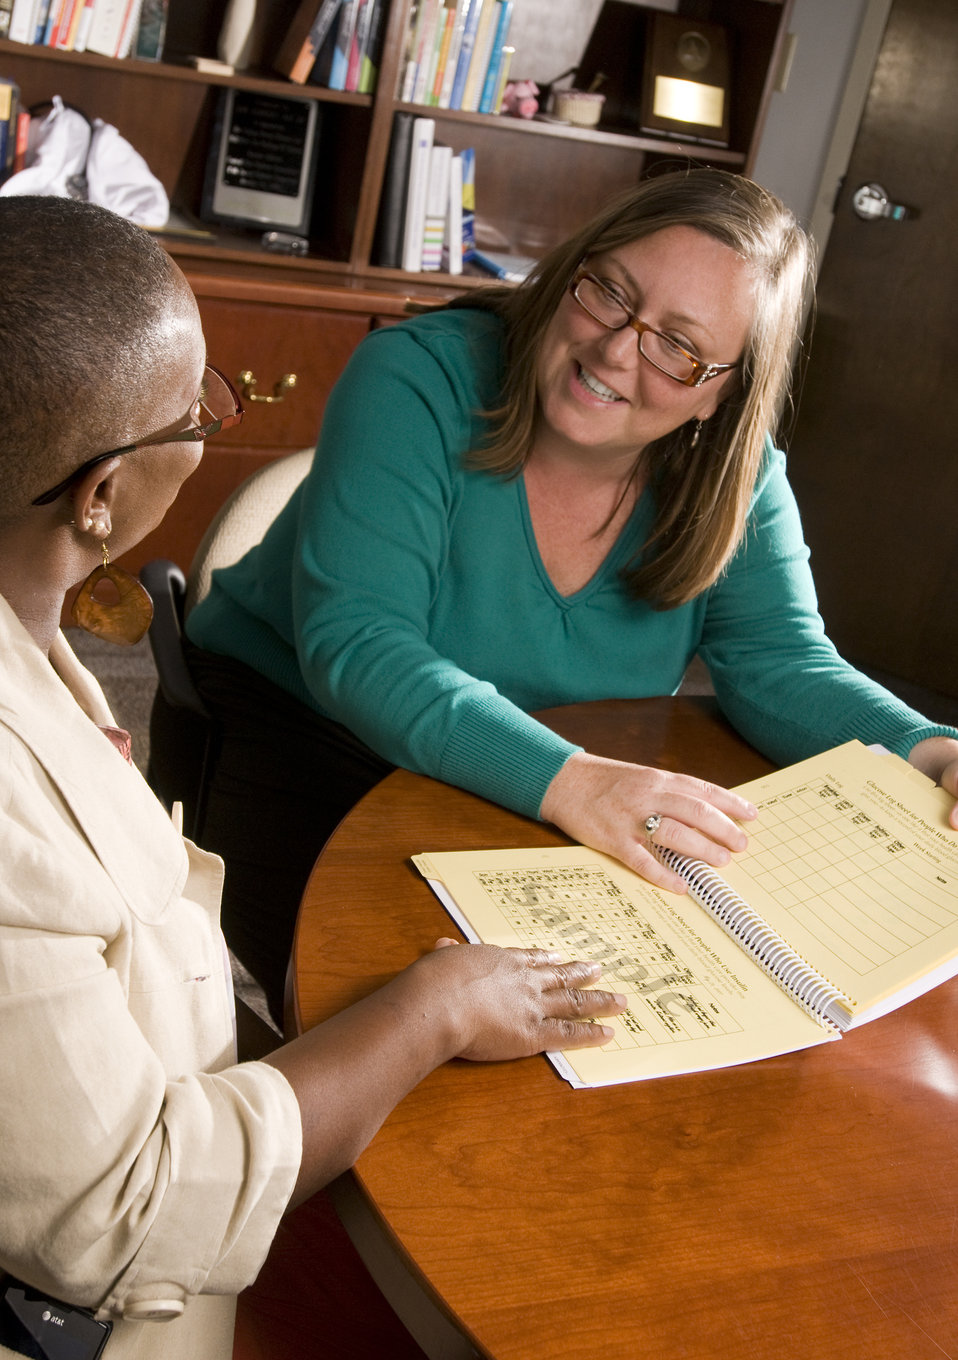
This image depicts a person with diabetes in the foreground listening to a community health worker familiar with the necessary proactive approach one must implement in order to maintain control over the detrimental effects of this disease. The health worker was providing answers to questions posed by the patient regarding actions she'd need to take, enabling her to lead a healthy, active life with diabetes.